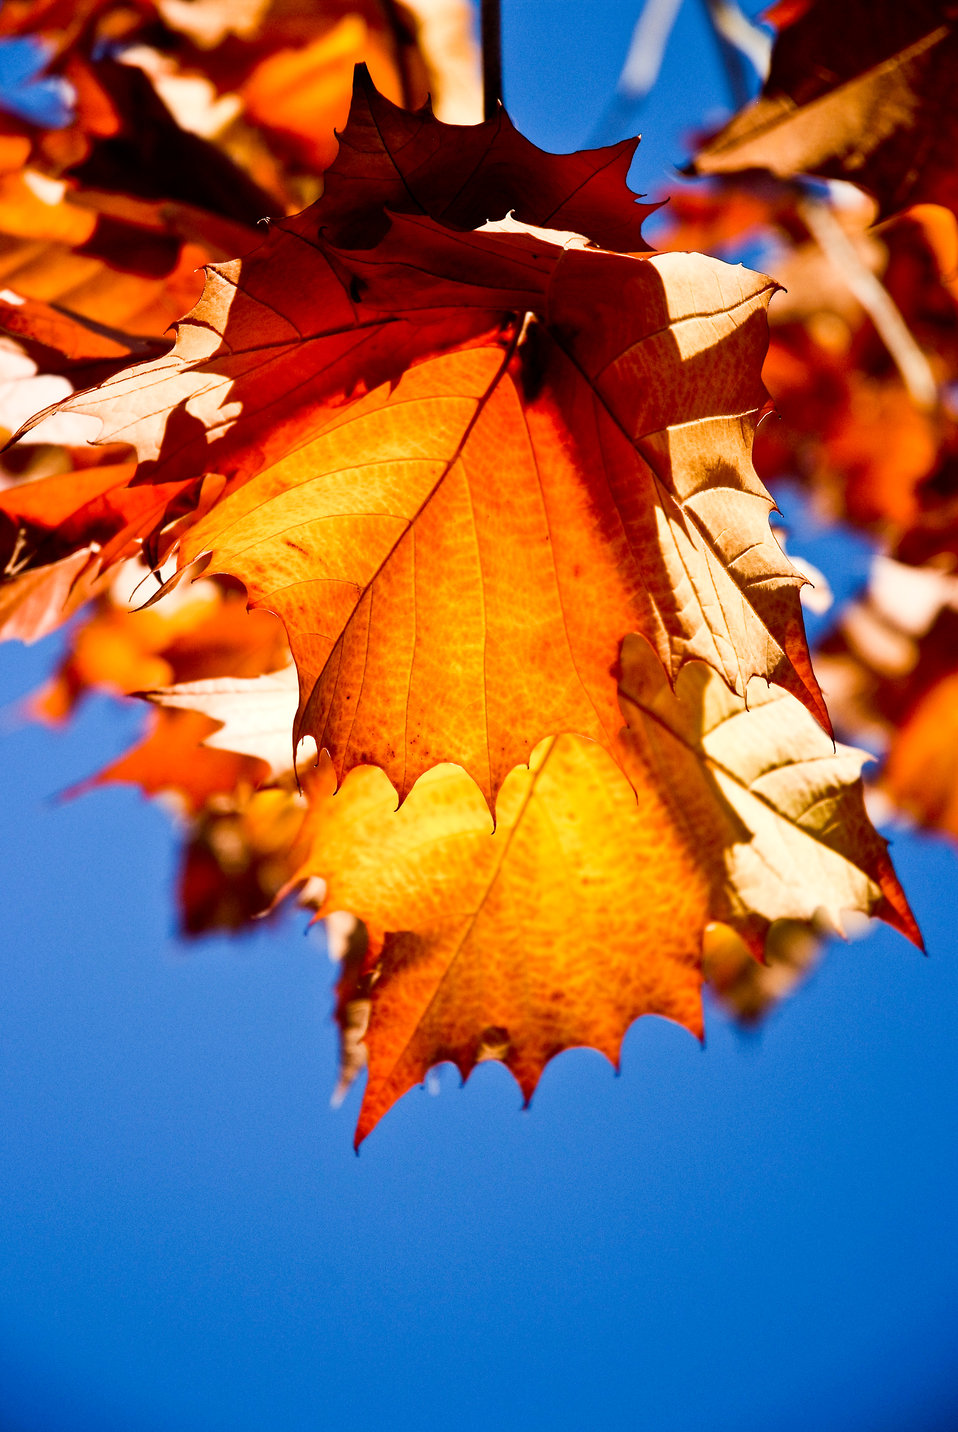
Sycamore leaves

Sacramento River National Wildlife Refuge Sycamore Tree on the Phelan Island Unit on SRNWR.